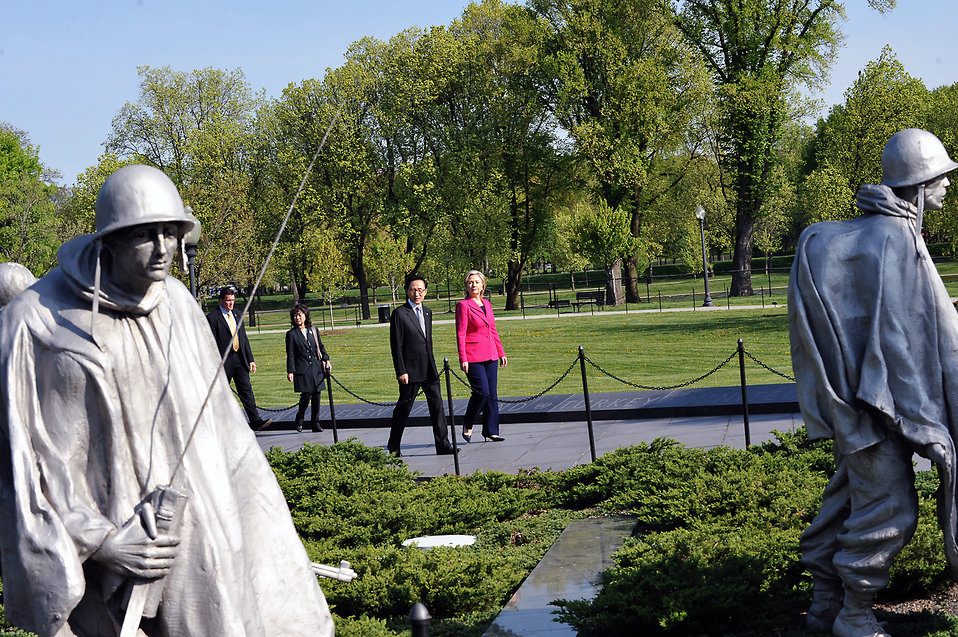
Secretary Clinton Marks 60th Anniversary of the Korean War

U.S. Secretary of State Hillary Rodham Clinton participates in a wreath laying ceremony with Korean President Lee Myung-bak on the 60th Anniversary of the Korean War, at the Korean War Memorial in Washington, DC April 12, 2010.